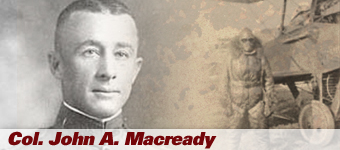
Col. John A. Macready packed a pile of